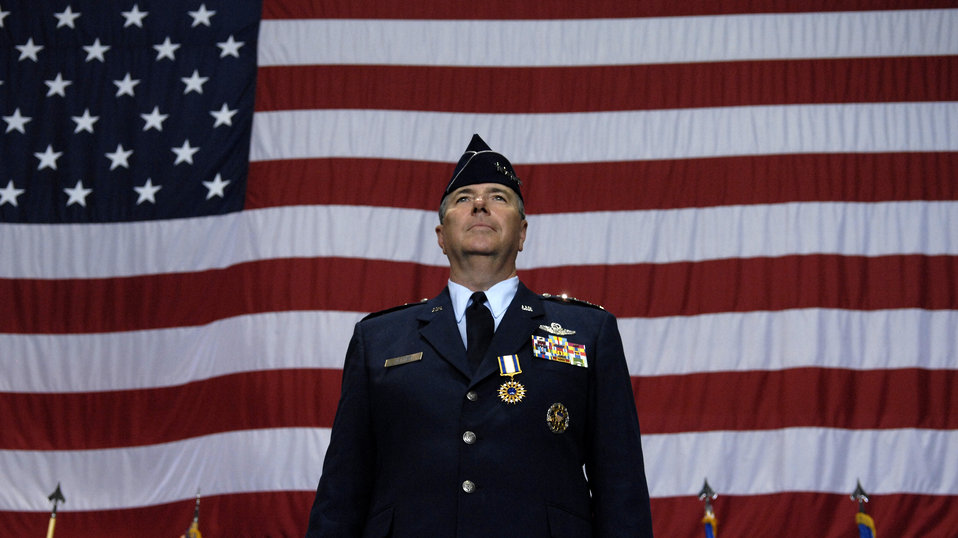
General Chandler takes command

Gen. Paul V. Hester, commander Pacific Air Forces, prepares to receive his final salute from the Airmen of PACAF Nov. 30, during his change of command ceremony at Hickam Air Force Base, Hawaii. Gen. T. Michael Moseley, Chief of Staff, U.S. Air Force and Adm. Timothy J. Keating, Commander U.S. Pacific Command presided over the change of command. Gen. Carrol H. Chandler assumed command of PACAF during the ceremony.